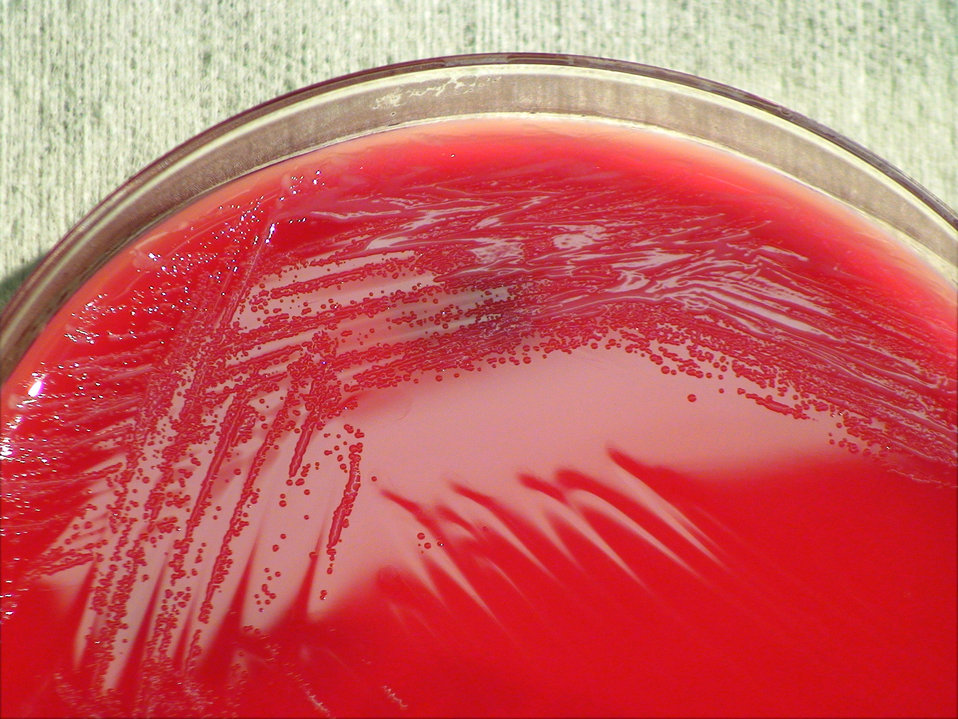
A closer view of PHIL 12375, this photograph depicts light colonial growth displayed by an unknown Gram-negative Acinetobacter sp. bacteria, which was grown on a medium of sheep's blood agar (SBA), for a 24 hour time period, at a temperature of 37�C.